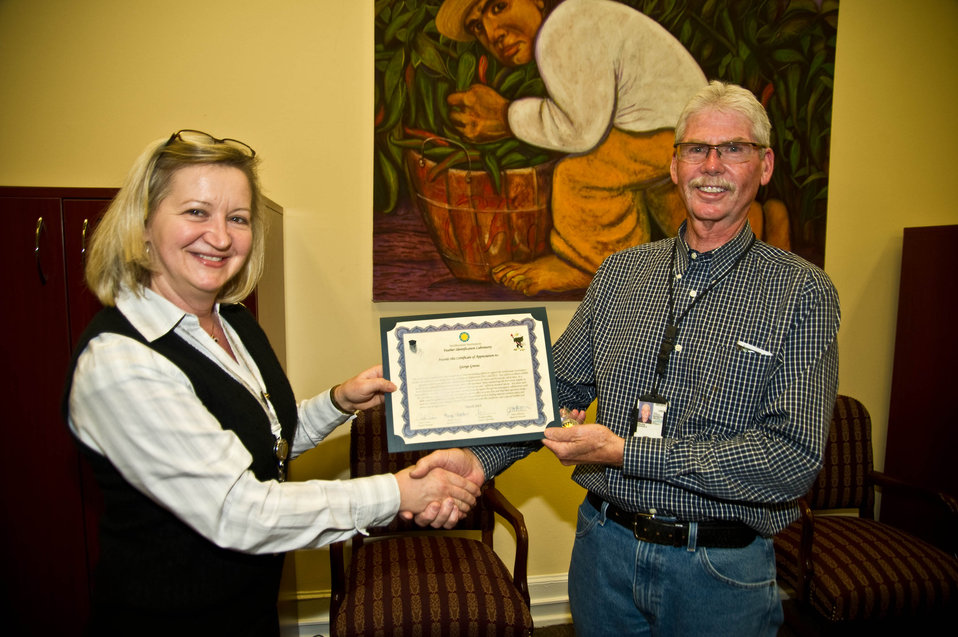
Smithsonian Institution National Museum of Natural History Research Scientist and Manger in the Feather Identification Lab Dr. Carla Dove gives a certificte and special recognition coin for donating the most specimens to the Smithsonian's Feather Lab toUSDA APHIS Wildlife Service Biologist Idaho State director George Graves on Tuesday, Mar. 19, 2013.